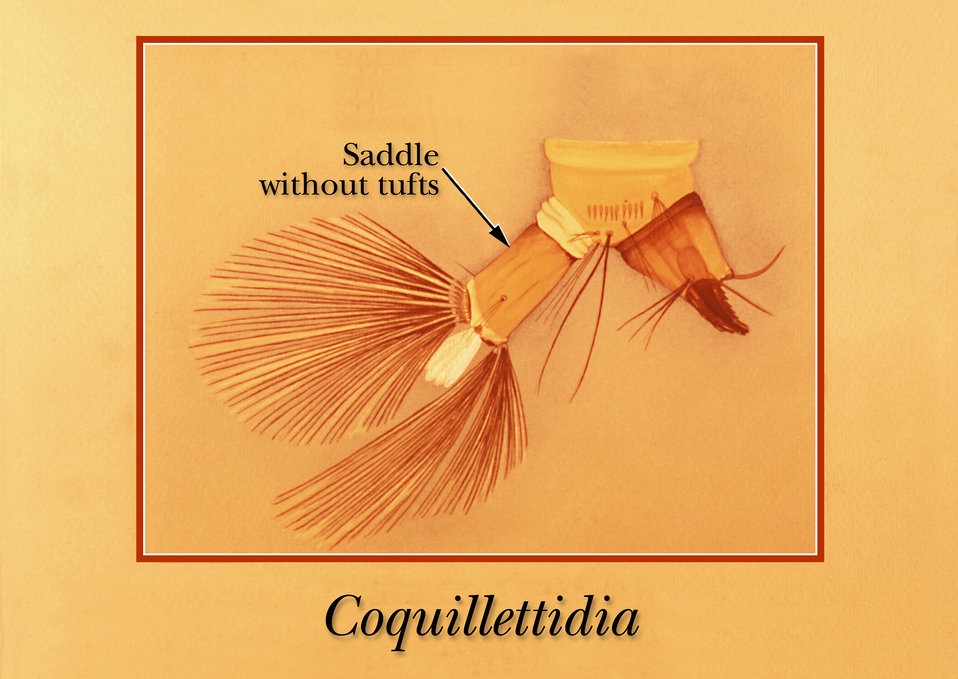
An illustration of a Coquillettidia mosquito larva identifying the terminal abdominal segments.